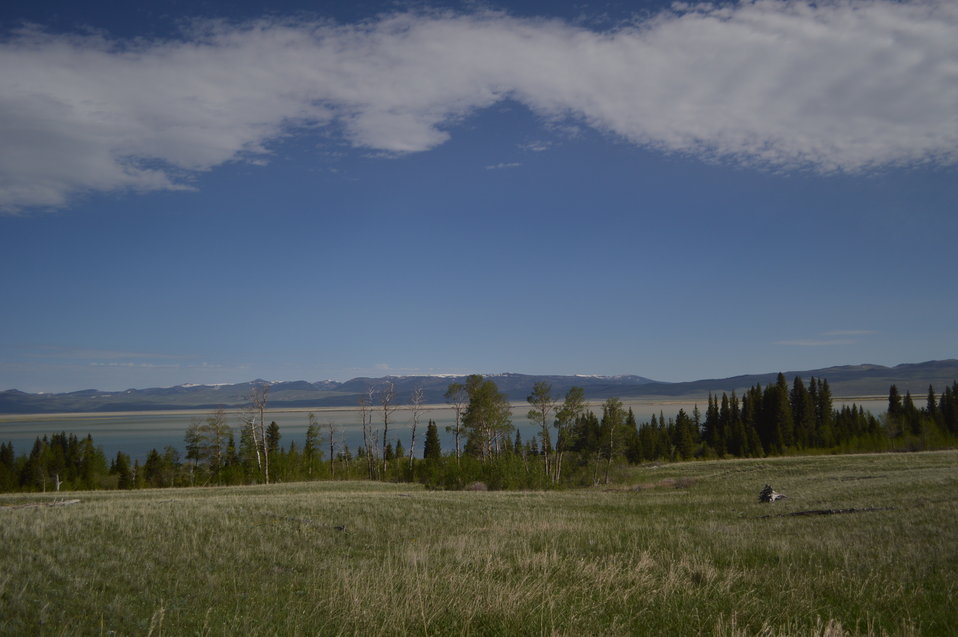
Regional Leadership Visit to Montana 2014